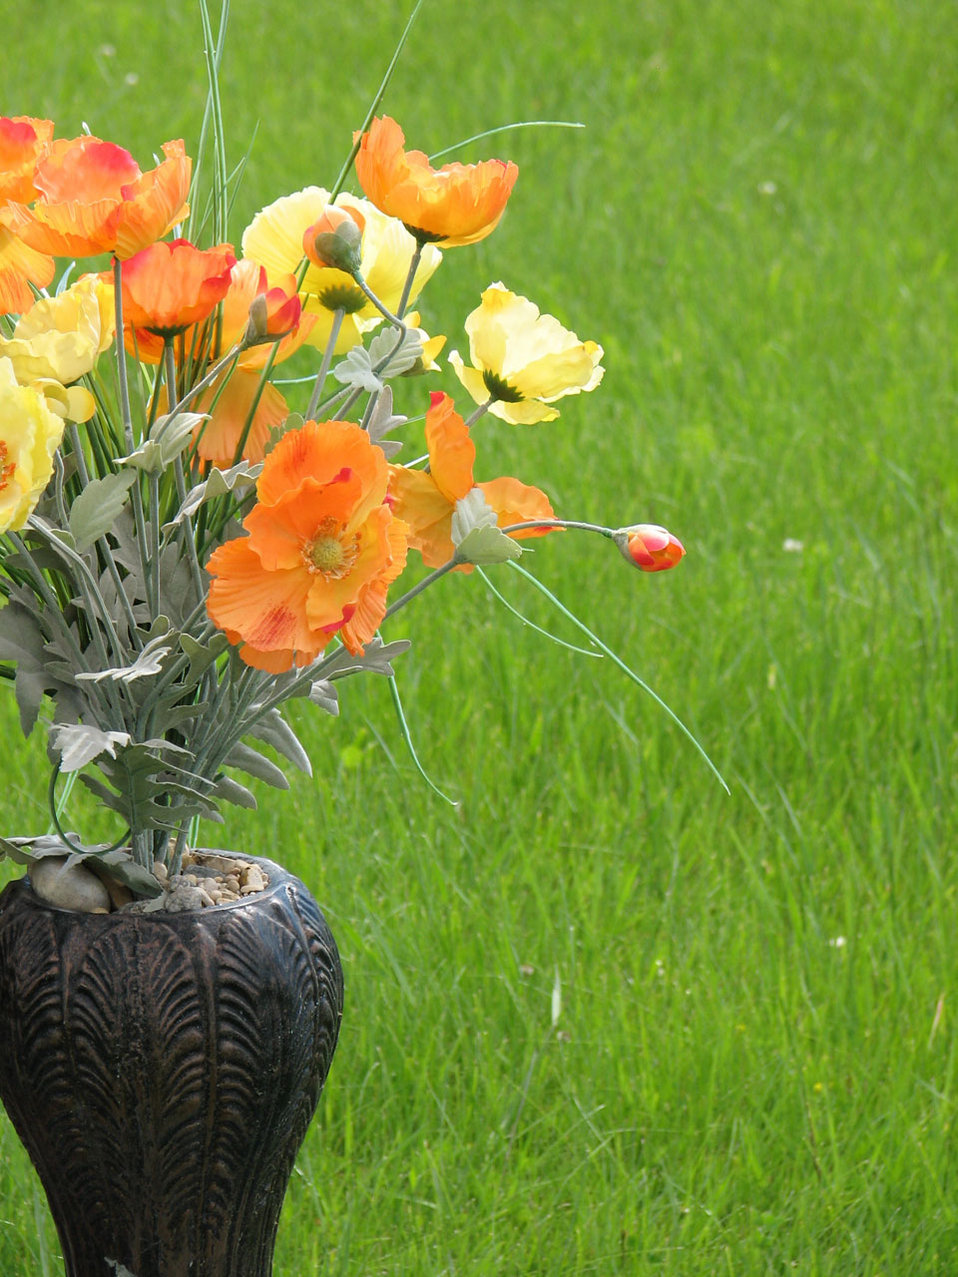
Flower vase grass closeup

Great background for text.